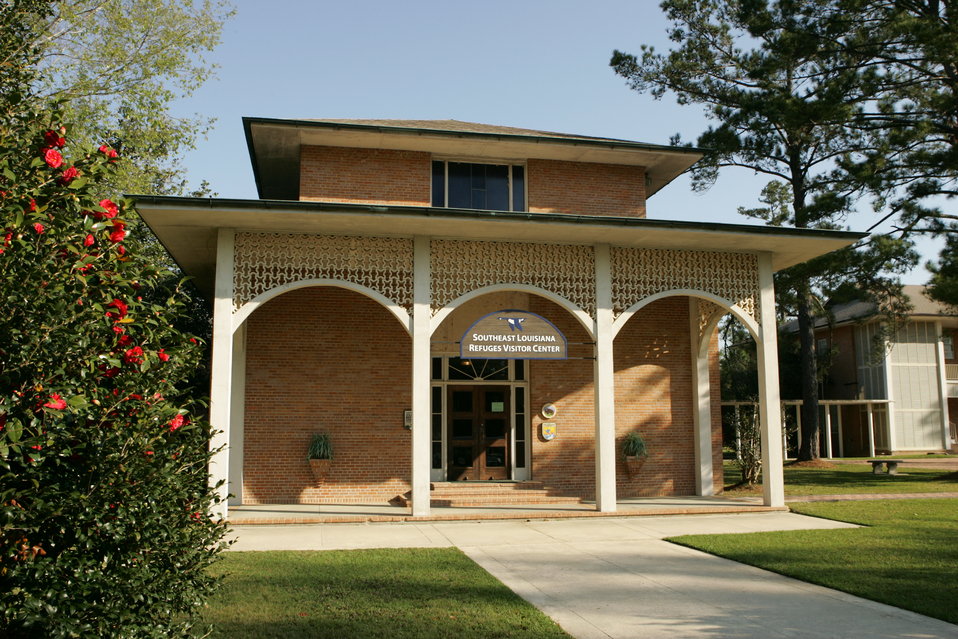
Big Branch Marsh visitor center.

Exterior view of the Big Branch Marsh National Wildlife Refuge visitors center.